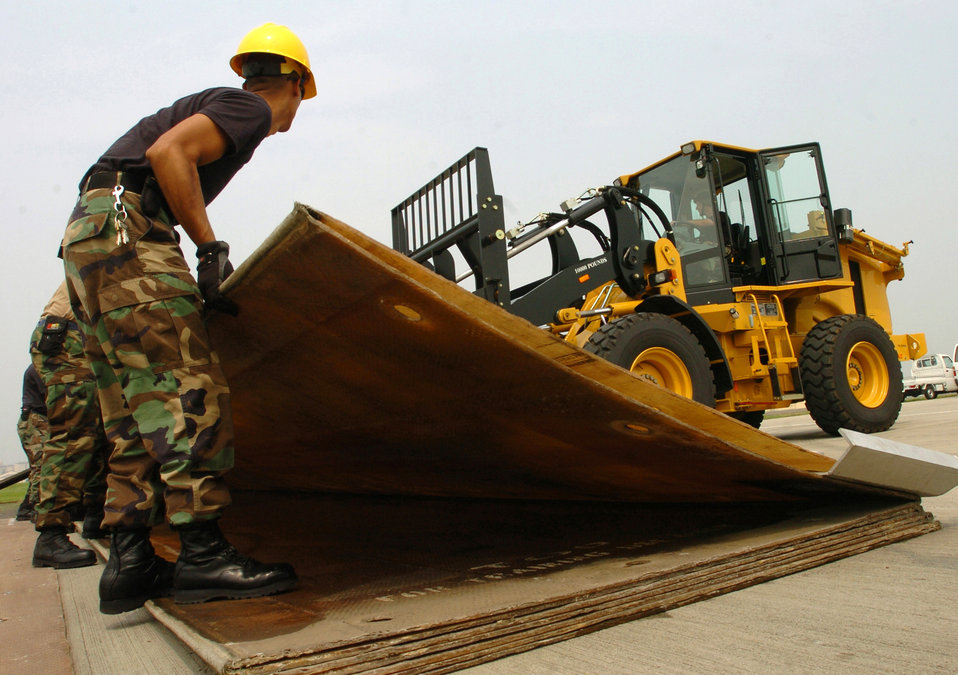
Running fiber

YOKOTA AIR BASE, Japan -- Staff Sgt. Orlando Crespo helps move a fiberglass mat during airfield damage repair training on the flightline here. During the training, 374th Civil Engineer Squadron Airmen simulated drilling holes into the runway to secure the mats. The mats provide a protective surface for aircraft landing in austere locations. The Airmen are trained to deploy into bare-base locations, assess airfield capabilities, prepare aircraft landing areas, clear obstacles, install emergency airfield lighting systems and repair airfield damage.